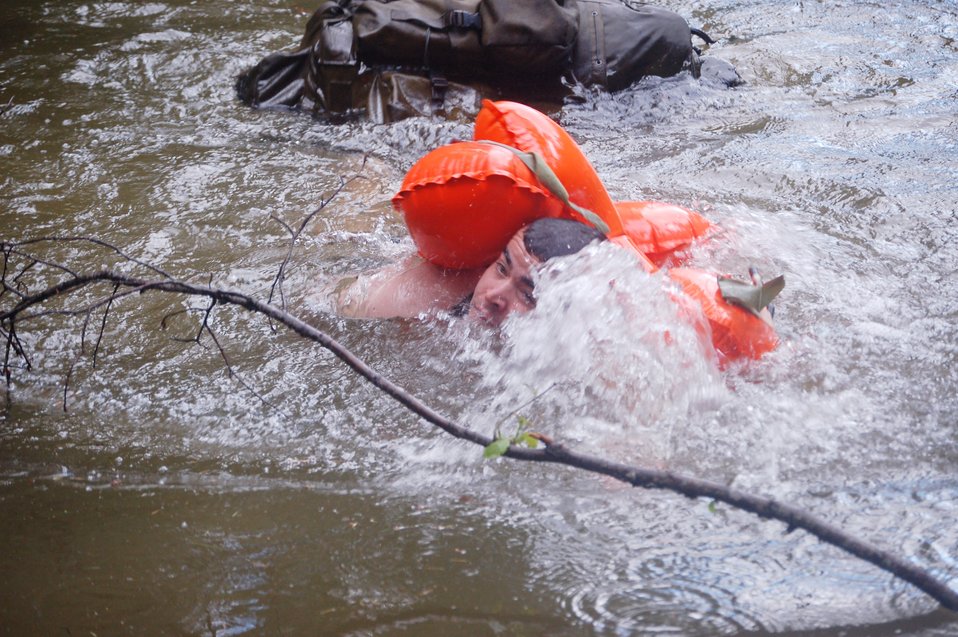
Air Force 'Guardian Angels' put to test at survival competition

A competitor in the 2007 SERE (survival, evasion, resistance and escape) Challenge approaches the shore after a 300-meter swim through frigid water in Colville National Forest near Fairchild Air Force Base, Wash. The SERE Challenge was open to members of the Guardian Angel weapons system: SERE specialists; pararescuemen; and combat rescue officers. Fifteen two-man teams competed to demonstrate their mastery of survival and combat skills June 11-14.